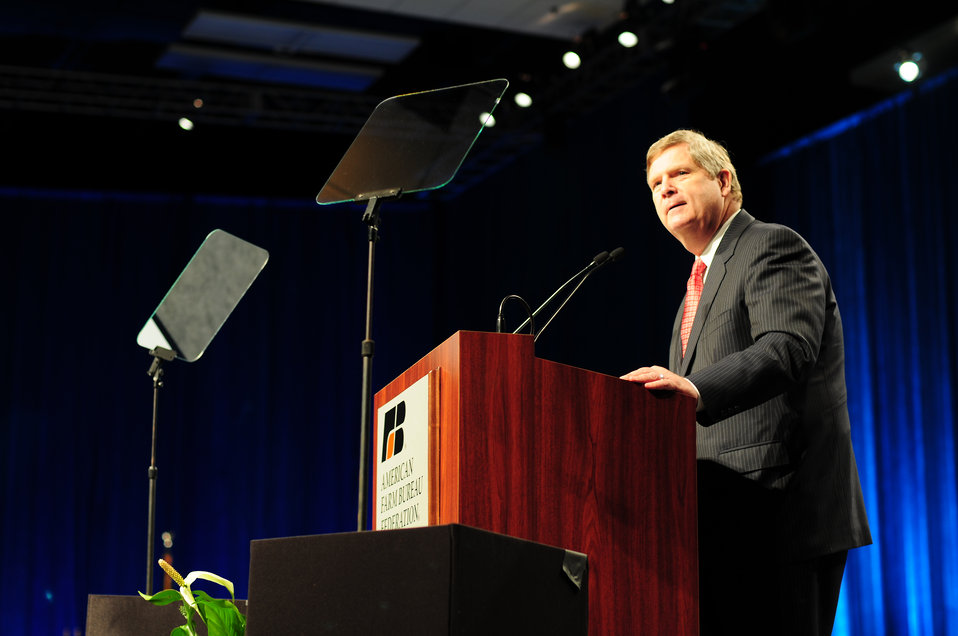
Agriculture Secretary Tom Vilsack speaks at the American Farm Bureau Annual Meeting Closing Ceremony at the Convention Center in Waikiki, Hawaii, on Sunday, January 9, 2012.